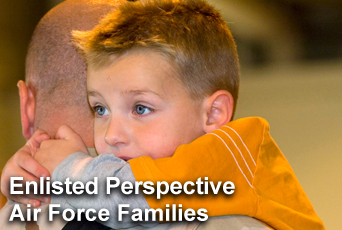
Enlisted Perspective

In the newest